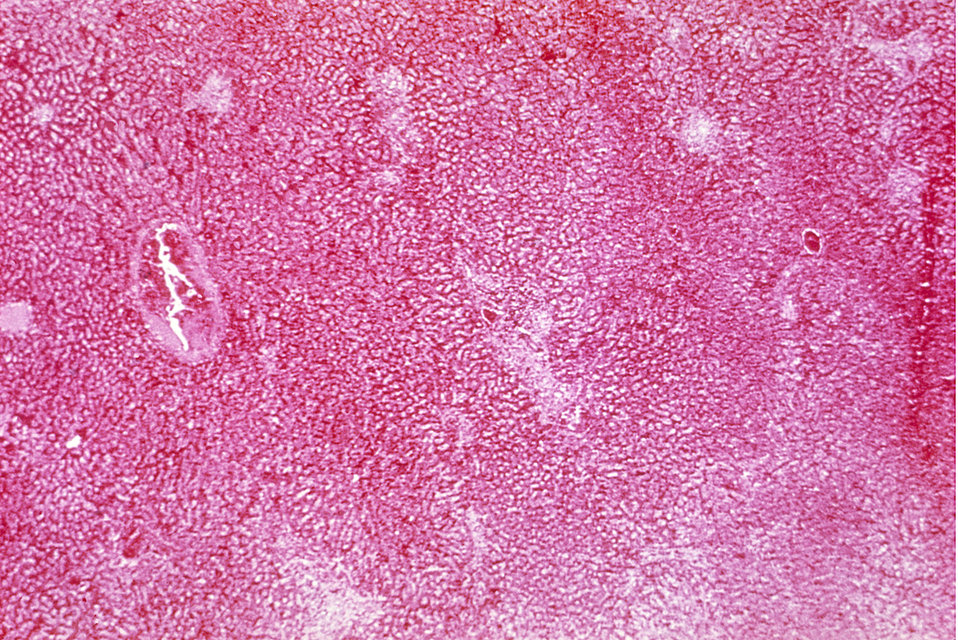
This photomicrograph reveals the histopathologic chronic inflammatory changes associated with paracoccidioidomycosis.